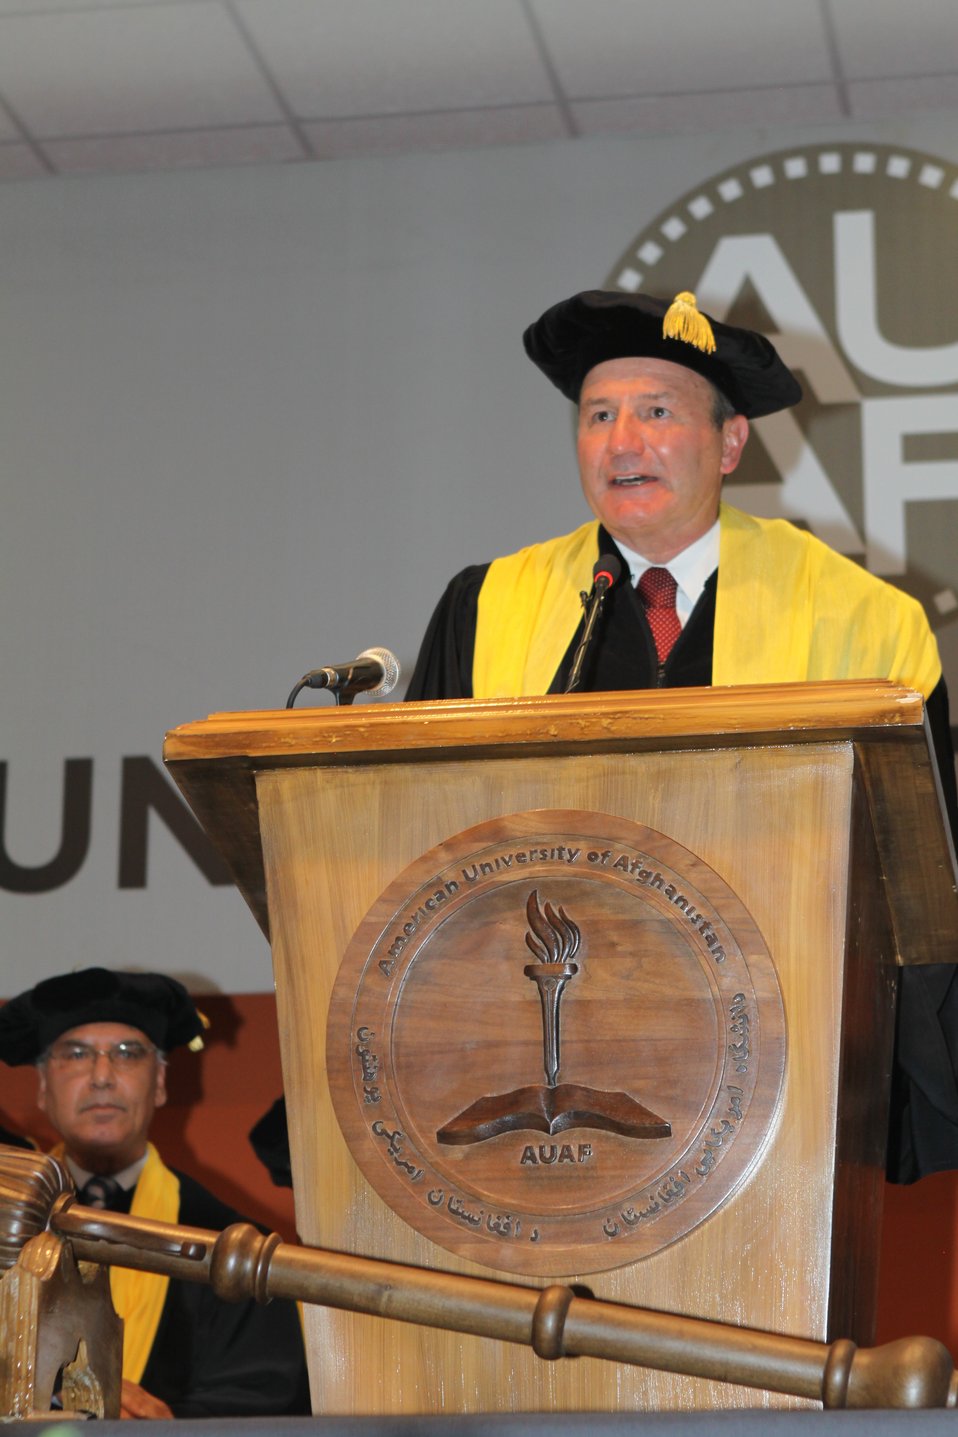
100526 AUAF Graduation 215